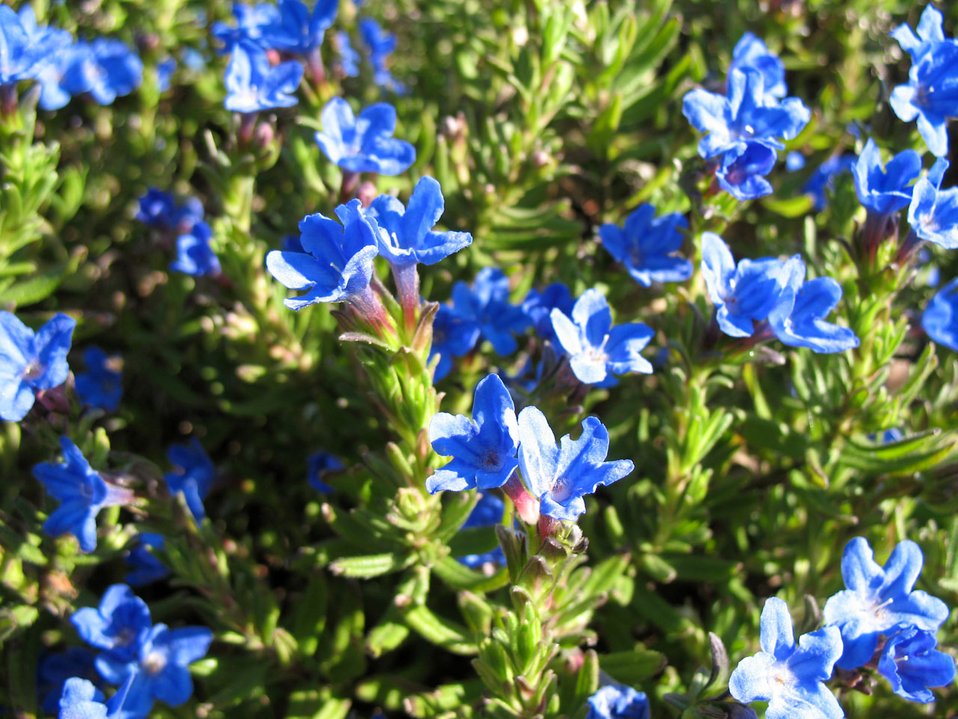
Tiny blue flowers background.